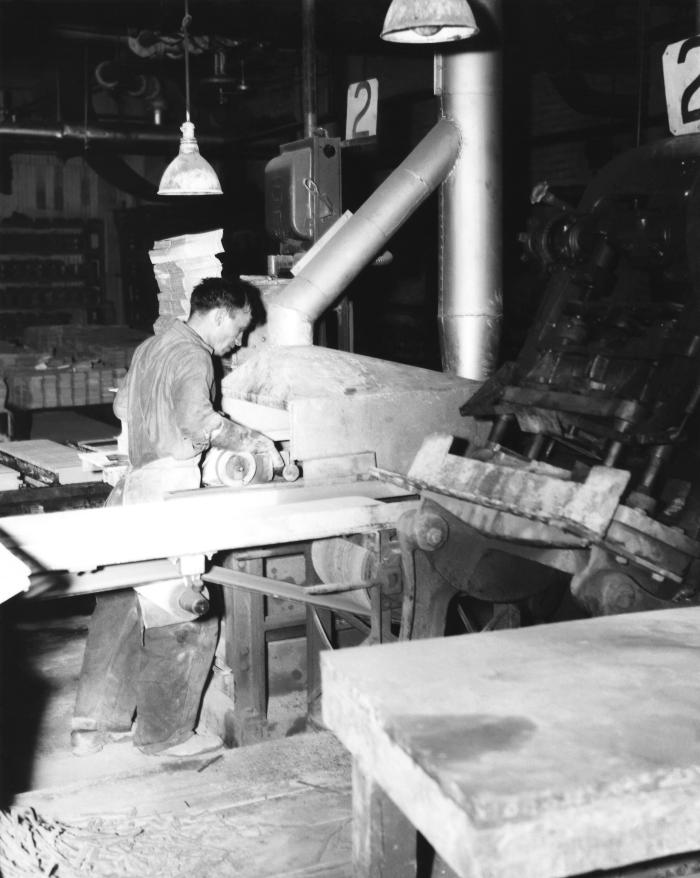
This 1947 historical photograph was provided by the Center for Disease Control's (CDC), National Institute for Occupational Safety and Health (NIOSH). It depicted an Indiana factory worker who was performing a task inside a manufacturing setting, at a workstation equipped with a ventilation system, which extracted the airborne particulates from his workspace. Though the immediate airspace around the hand-held materials was suctioned, the air around his head was not. Therefore, the use of a filtered breathing mask, as well as protective goggles, both of which would have made this man's workplace environment healthier, were not implemented in this case. He was, however, wearing protective, heavy-duty gloves.